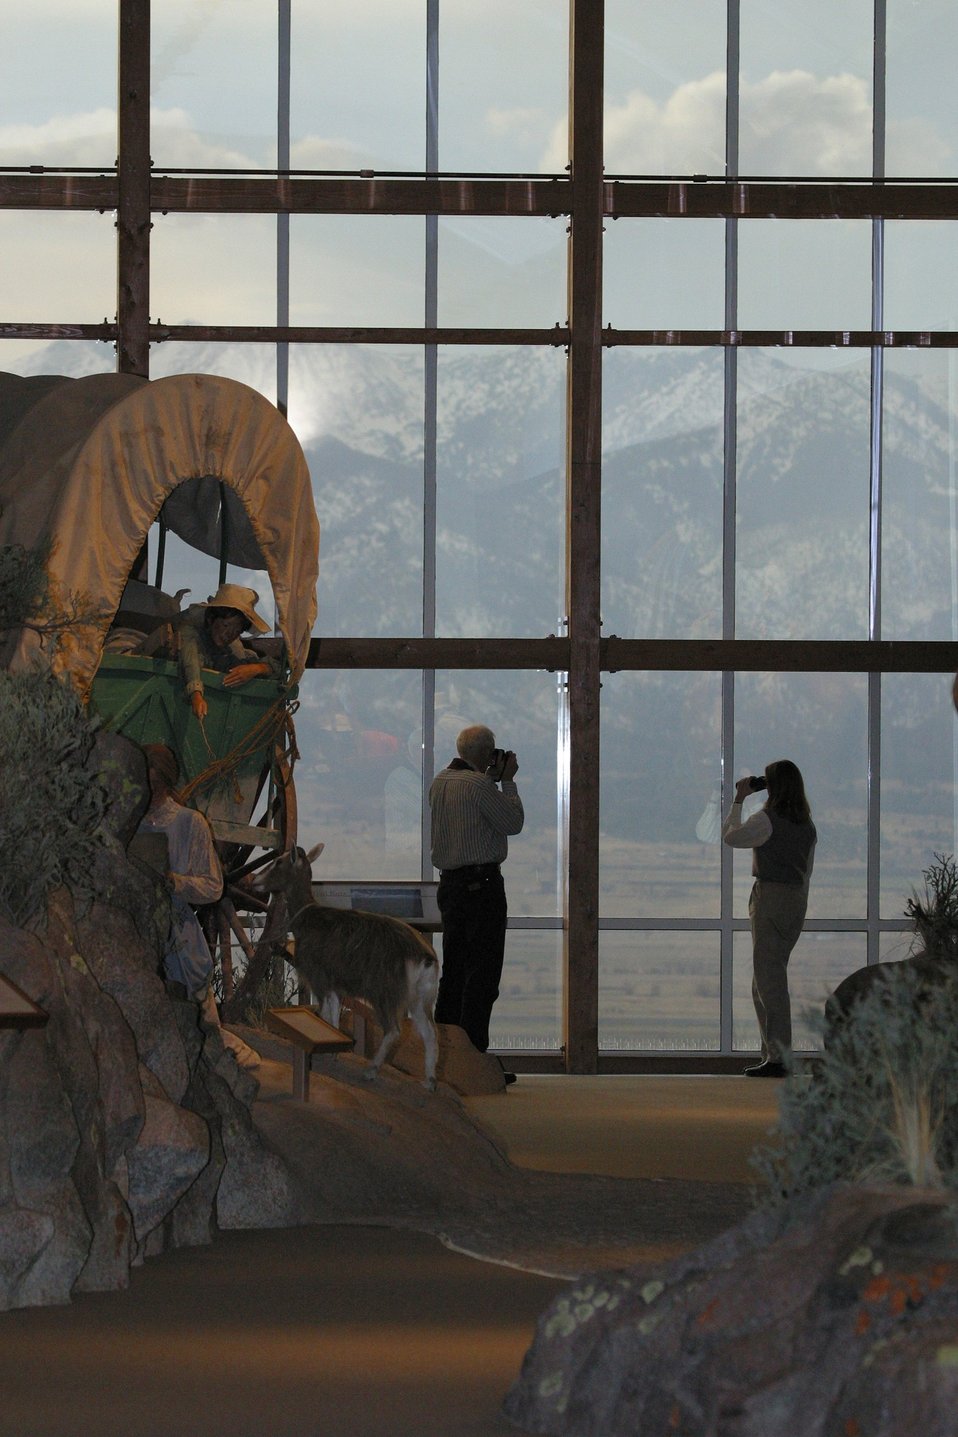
The Elkhorn Mountains can be seen from the Gallery window.